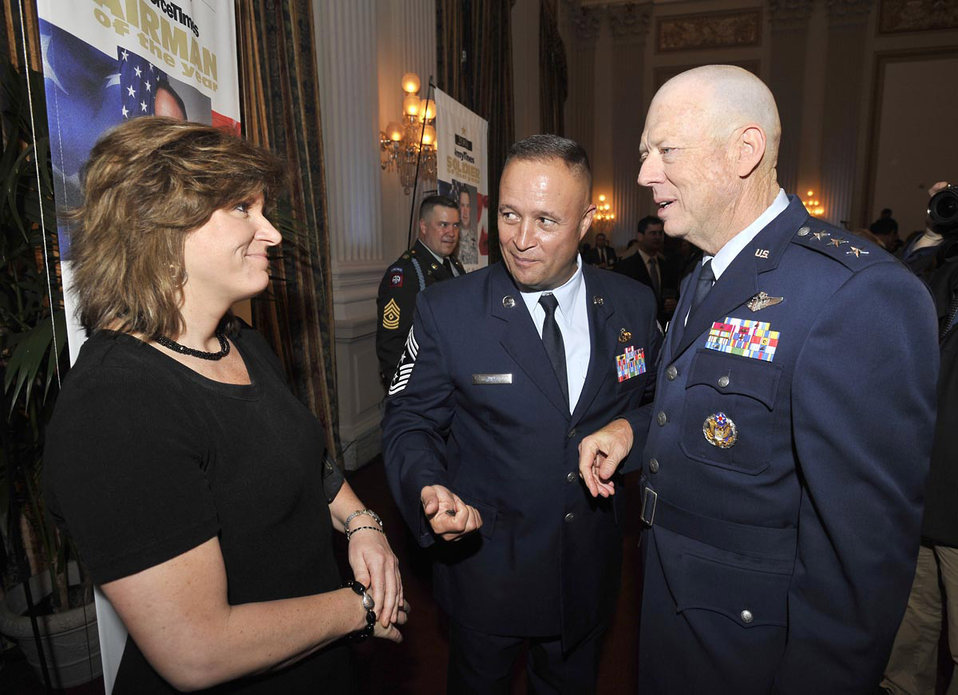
Chief receives newspaper's Airman of the Year award

Chief Master Sgt. Stephen Page and his wife speak with Air Force Surgeon General Lt. Gen. Jim Roudebush at an awards reception July 30 in Washington, D.C. Chief Page was recognized as the Air Force Times newspaper's Airman of the Year.